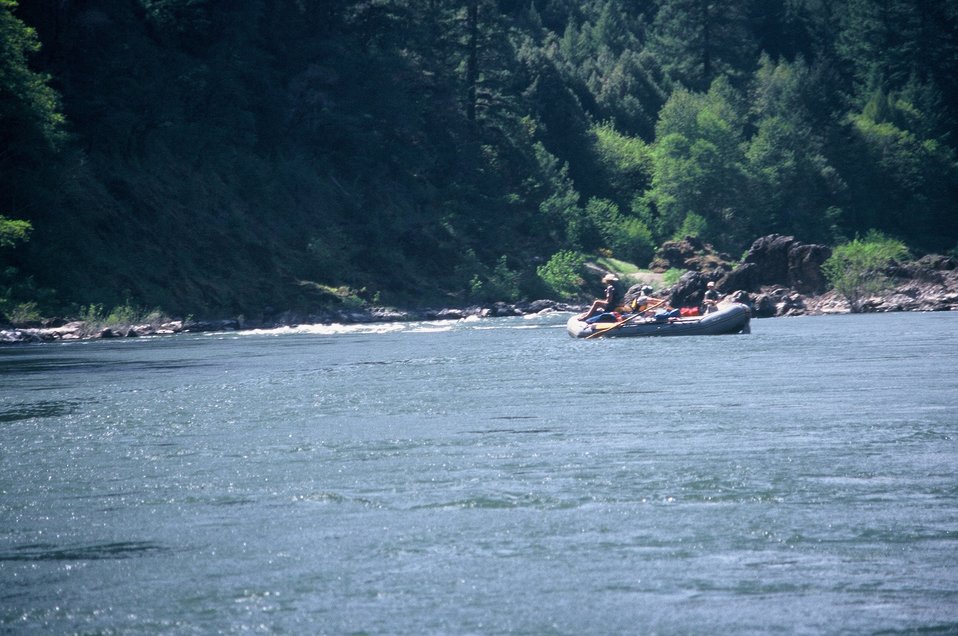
Wild section of the Rogue River from Grave Creek to Foster Bar May 19 to May 22.